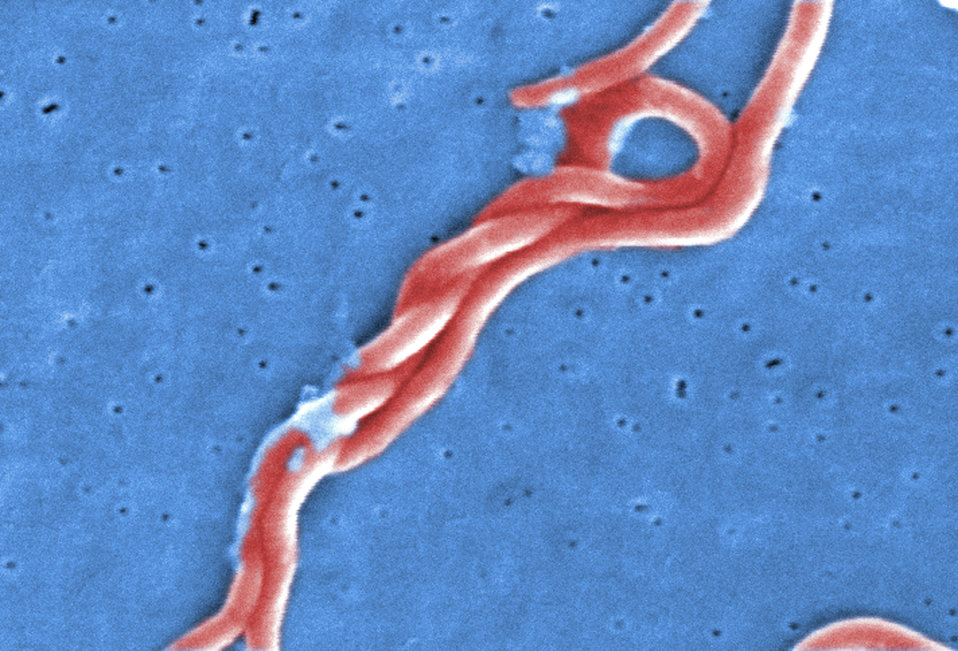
Under a high magnification, this digitally-colorized scanning electron micrograph depicts four Gram-negative, anaerobic, Borrelia burgdorferi bacteria, which had been derived from a pure culture.